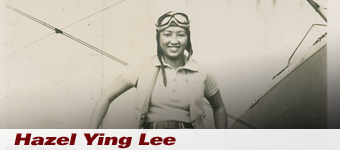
Hazel Ying Lee in 1932

Hazel Ying Lee, the first Chinese-American woman to receive her pilot's license in 1932, heritage spotlight graphic.